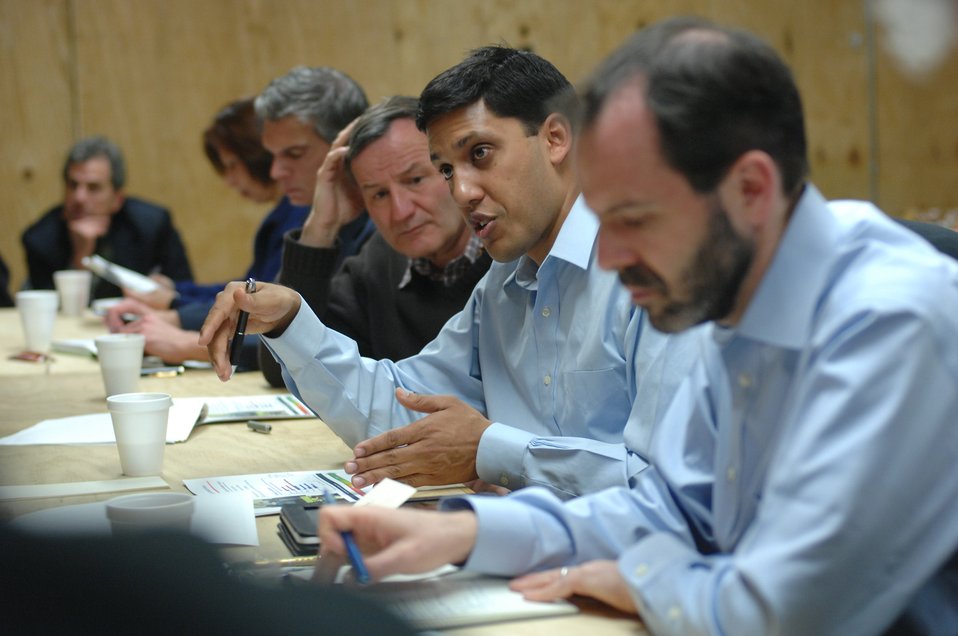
110209sv Shah539

Dr. Rajiv Shah, Administrator of the United States Agency for International Development (USAID), meets with members of DST Surkh Rod in Nangarhar province on Wednesday, February 9, 2011. (S.K. Vemmer/Department of State)